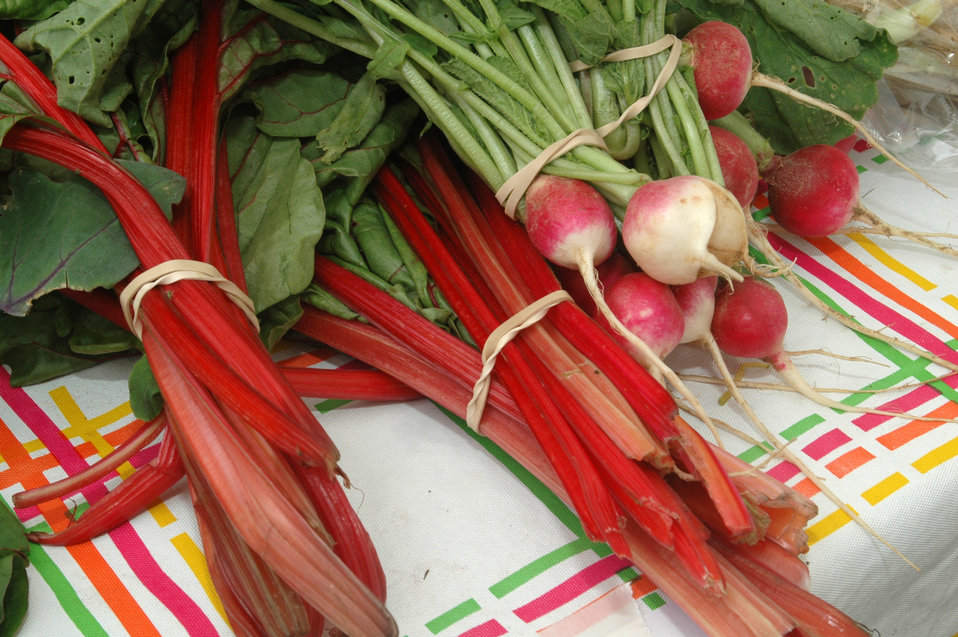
Rhubarb and turnips for sale at the U.S. Department of Agriculture (USDA) Farmer’s Market held in the East parking lot of USDA's Whitten Building in Washington, D.C. on June 2, 2006.